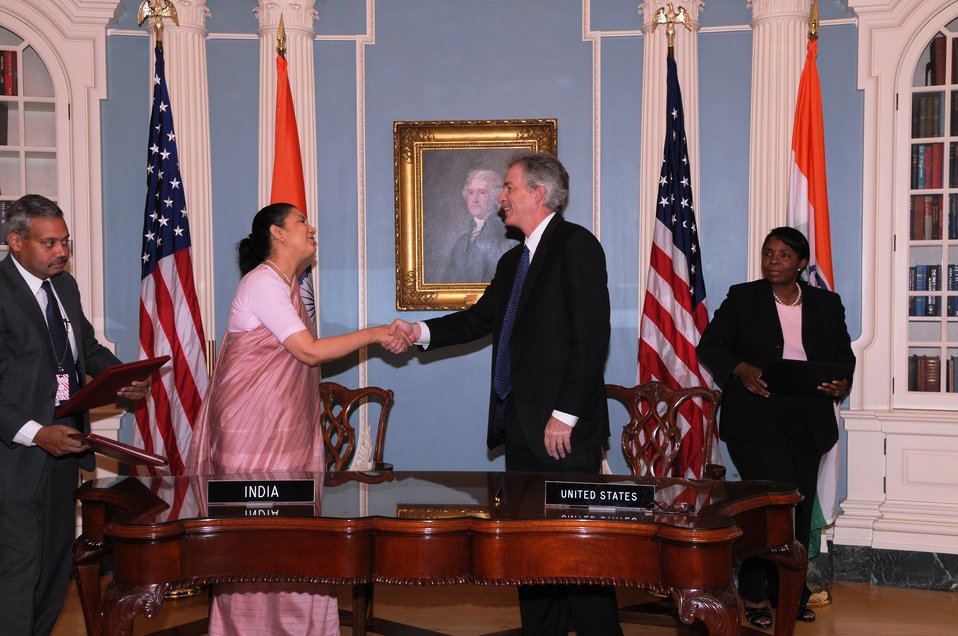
Under Secretary Burns and Indian Ambassador to the U.S. H.E. Meera Shankar Shake Hands

U.S. Under Secretary of State for Political Affairs William J. Burns (right) and Indian Ambassador to the United States H.E. Meera Shankar (left) shake hands after signing the Arrangements and Procedures Pursuant to Article 6 (iii) of the Agreement for Cooperation Concerning Peaceful Uses of Nuclear Energy regarding the reprocessing of U.S.- obligated nuclear material in India at the U.S. Department of State in Washington, D.C., on July 30, 2010.